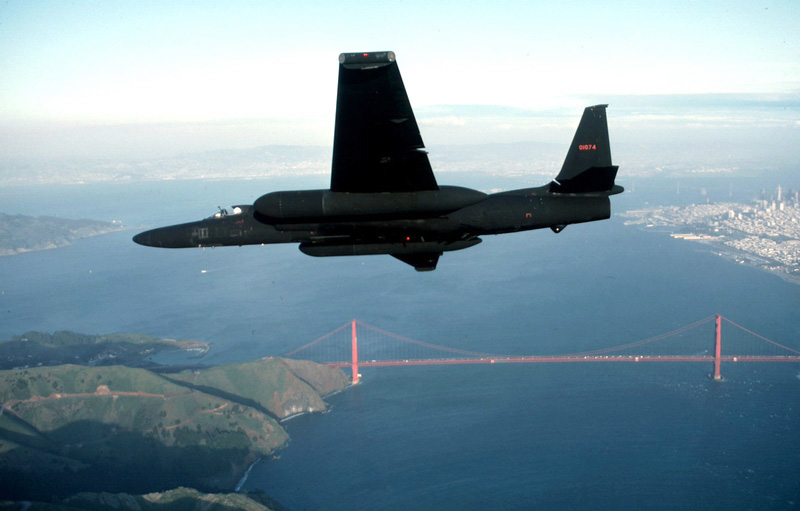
U-2

FILE PHOTO -- The U-2 provides continuous day or night, high-altitude, all-weather, stand-off surveillance of an area in direct support of U.S. and allied ground and air forces. It provides critical intelligence to decision makers through all phases of conflict, including peacetime indications and warnings, crises, low-intensity conflict and large-scale hostilities.The U-2 is a single-seat, single-engine, high-altitude, reconnaissance aircraft. Long, wide, straight wings give the U-2 glider-like characteristics. It can carry a variety of sensors and cameras, is an extremely reliable reconnaissance aircraft, and enjoys a high mission completion rate. Because of its high altitude mission, the pilot must wear a full pressure suit. The U-2 is capable of collecting multi-sensor photo, electro-optic, infrared and radar imagery, as well as performing other types of reconnaissance functions. However, the aircraft can be a difficult aircraft to fly due to its unusual landing characteristics.